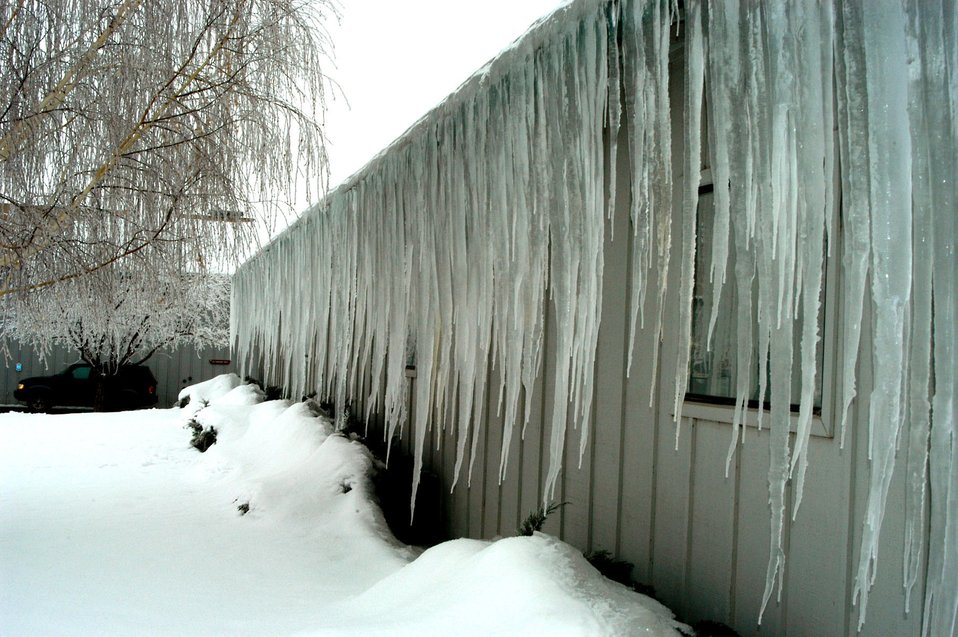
Burns District Office in Hines, Oregon January 22, 2004. Depicts snow accumulations with alternating thawing and freezing temperatures that created icicles over a two week period.